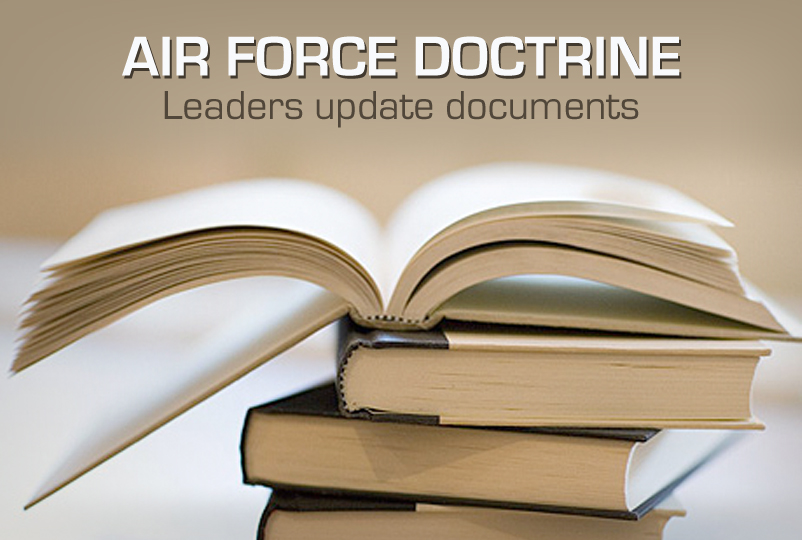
Air Force Doctrine